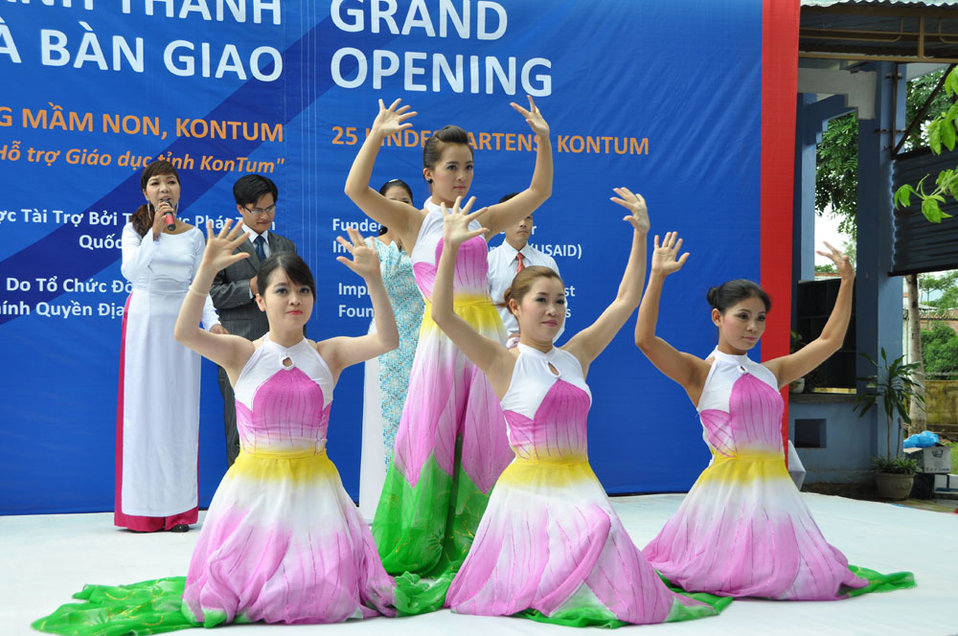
Singers and dancers perform at a kindergarten hand-over ceremony in Kon Tum.